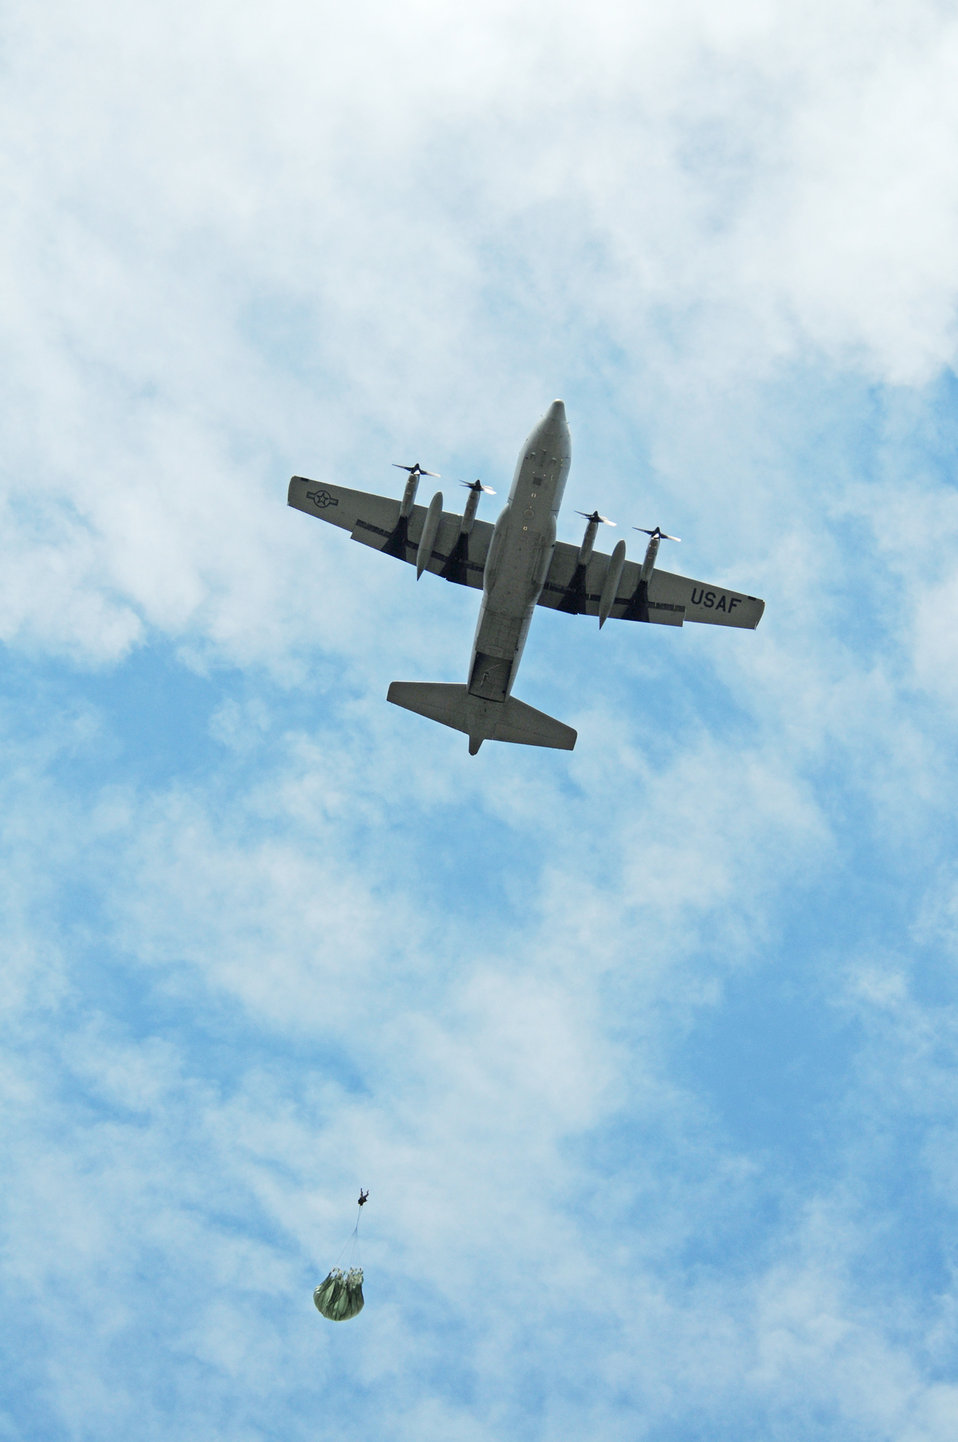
5 NATO countries take part in jump week

Col. Timothy Brown parachutes out of a C-130 Hercules over the Bunker drop zone Aug. 13 in southwestern Germany. U.S. Soldiers and Airmen performed a combined airborne jump with four other NATO countries during International Jump Week. Colonel Brown is the 86th Contingency Response Group commander.